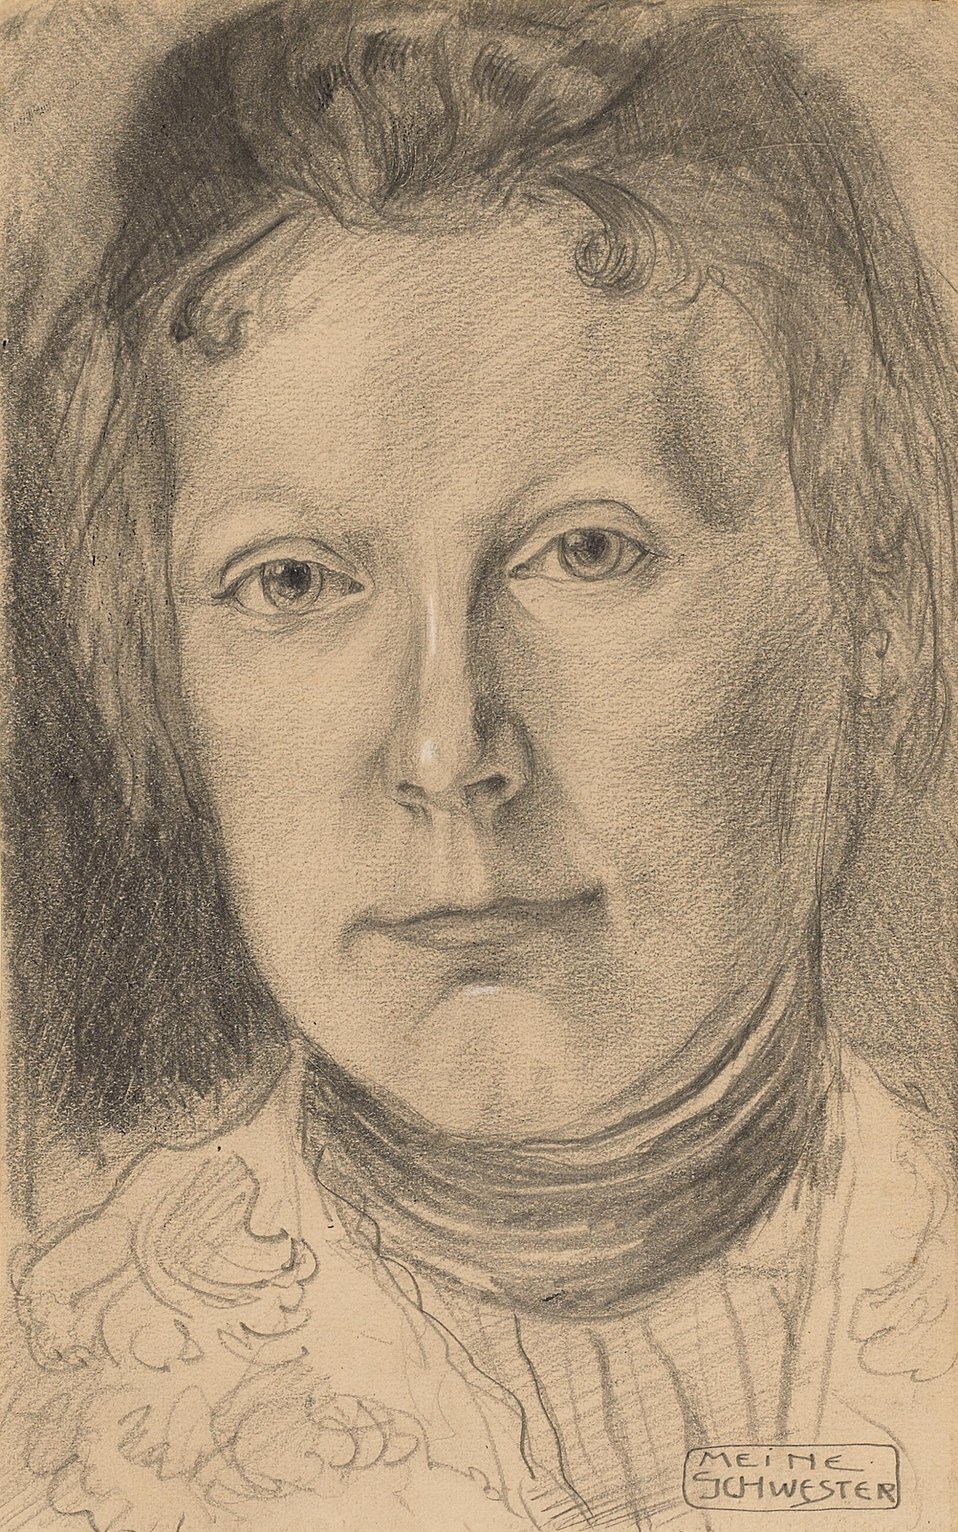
Bildnis Ottilie Macke („Meine Schwester“). Bleistift und Kreide auf Papier. 21,9 x 13,5 cm. Provenienz: Ottilie Macke (Schwester des Künstlers) / Ehemals Leihgabe im Westfälischen Landesmuseum Münster